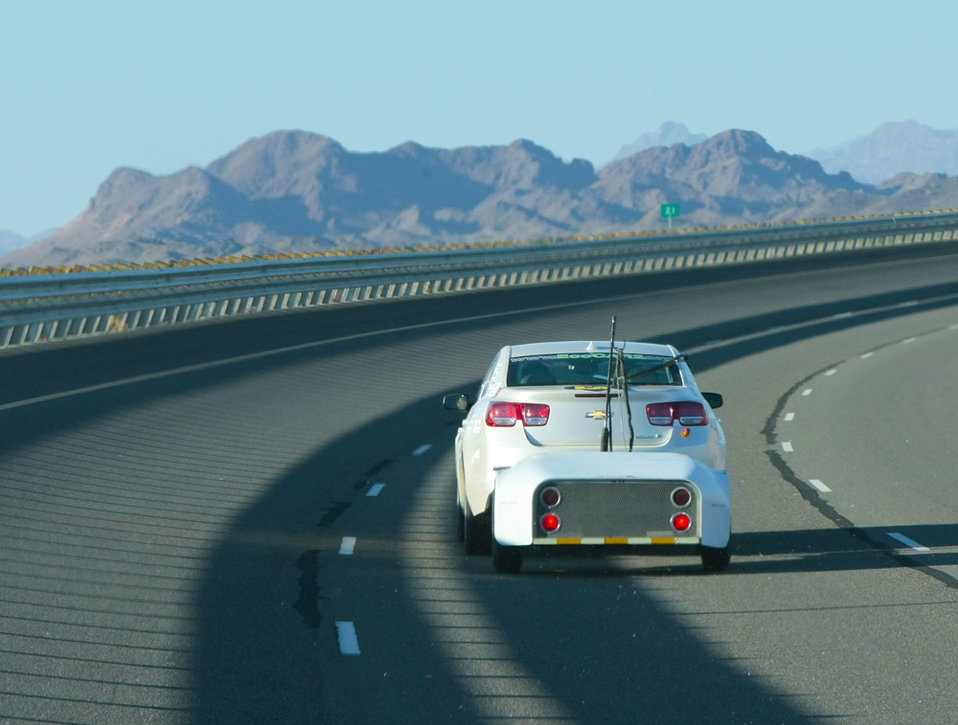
Using the same track GM uses to test its vehicles, the California State University-Los Angeles team competes in a gradeability event to test the endurance of the vehicle. The trailer attached to the vehicle simulates the same pull the vehicle would go through if climbing up a steep hill. | Photo courtesy of EcoCAR 2.